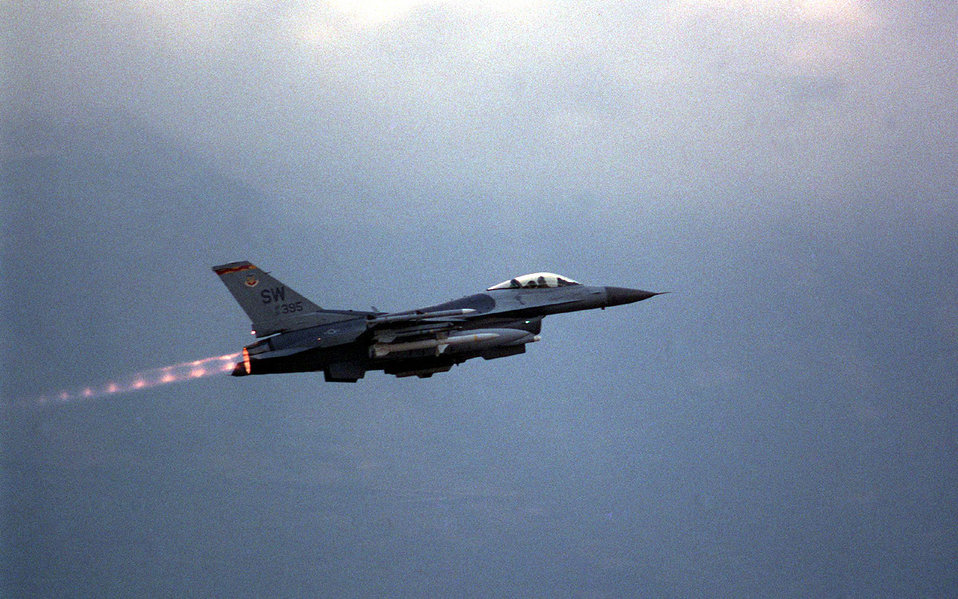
F-16 Fighting Falcon

FILE PHOTO -- An F-16 Fighting Falcon takes off on a mission supporting NATO's Operation Allied Force. The F-16 is deployed from the 78th Fighter Squadron at Shaw Air Force Base, S.C.